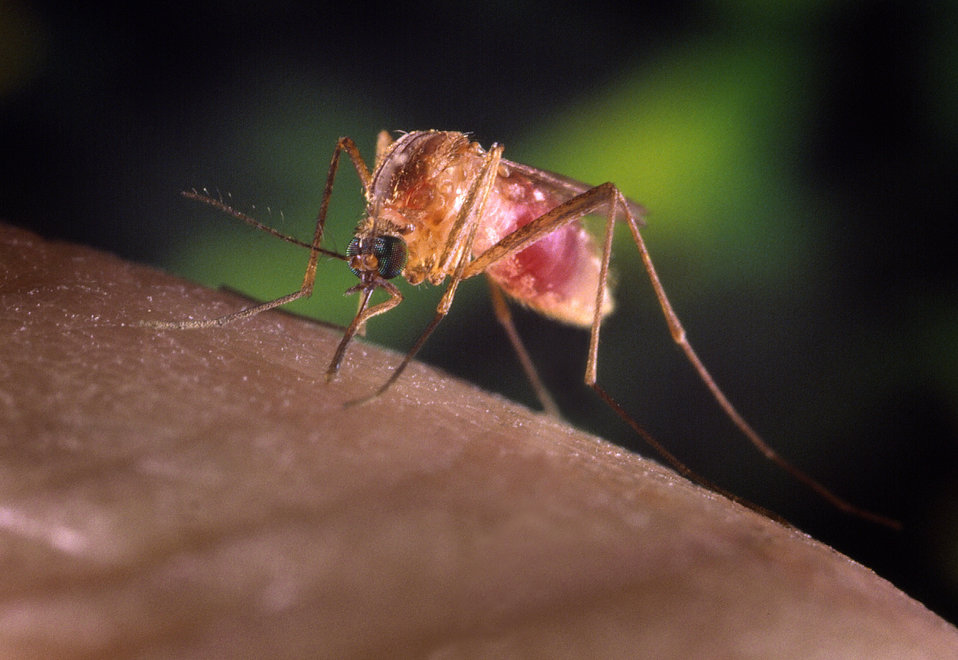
A Culex quinquefasciatus mosquito on a human finger.